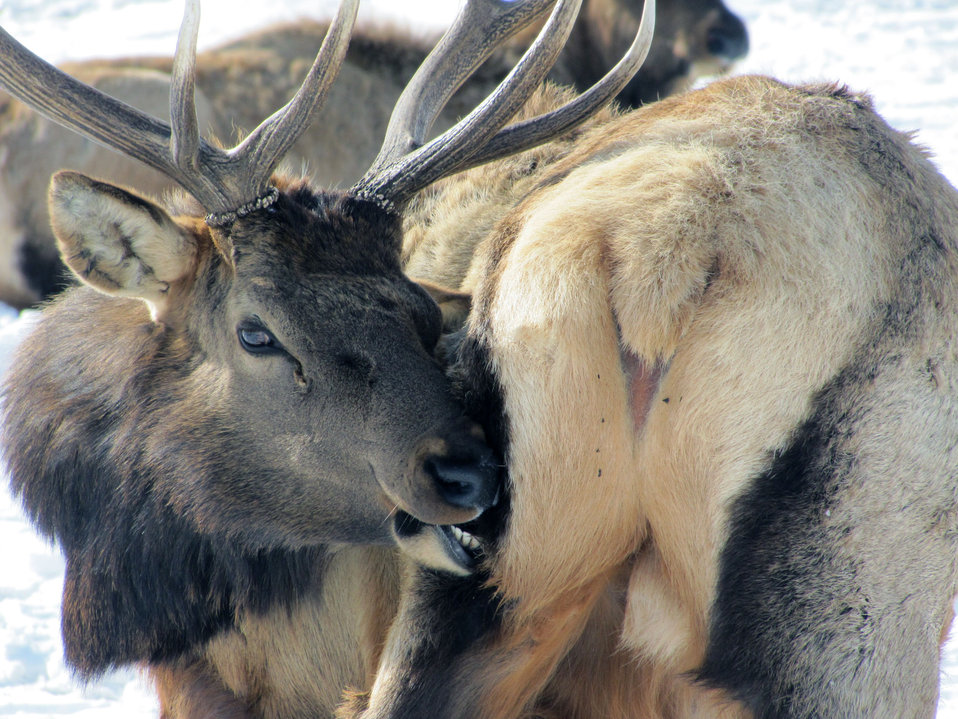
A Far Reach

A bull elk attends to a trouble spot. The name 'wapiti,' is from a Shawnee and Cree word meaning 'white rump.'